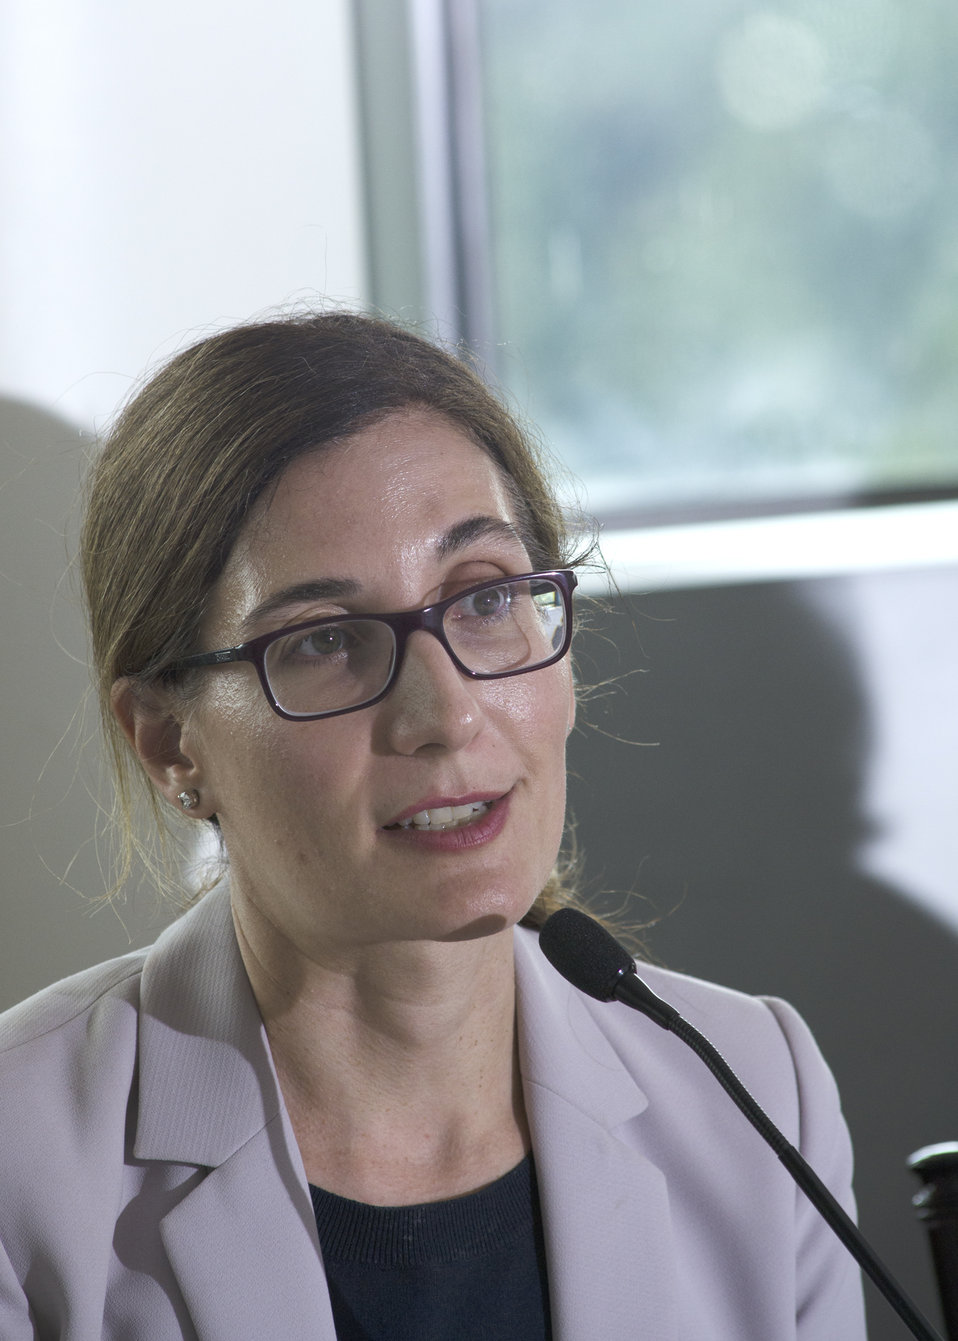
U.S. Department of Agriculture (USDA) Acting Deputy Assistant Secretary Office of Civil Rights Lisa Pino speaks at the conclusion of the first business meeting of USDA’s Council for Native American Farming and Ranching (CNAFR) held at the National Museum of the American Indian in Washington, D.C., on Wednesday, Aug. 15, 2012. CNAFR was created to advise the Secretary on ways to eliminate barriers to participation for Native American Farmers and Ranchers in USDA programs. The Council was established as part of the Keepseagle settlement, and is conducted under the oversight of USDA's Office of Tribal Relations under the Office of the Secretary of Agriculture.